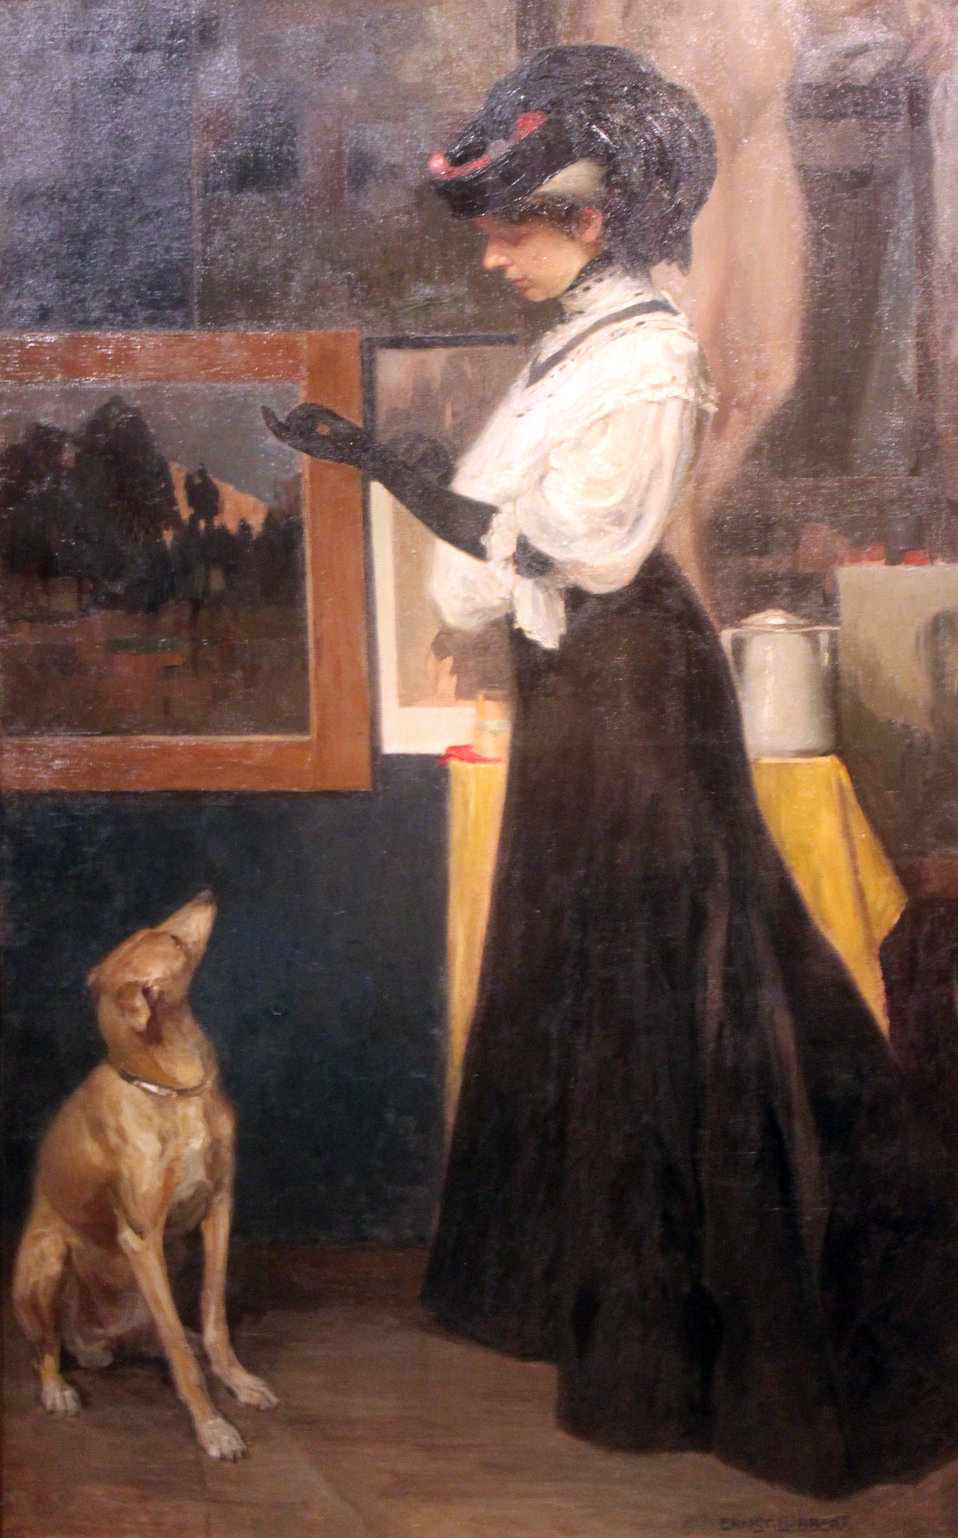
Lady with Greyhound Deutsch: Dame mit Windspiel